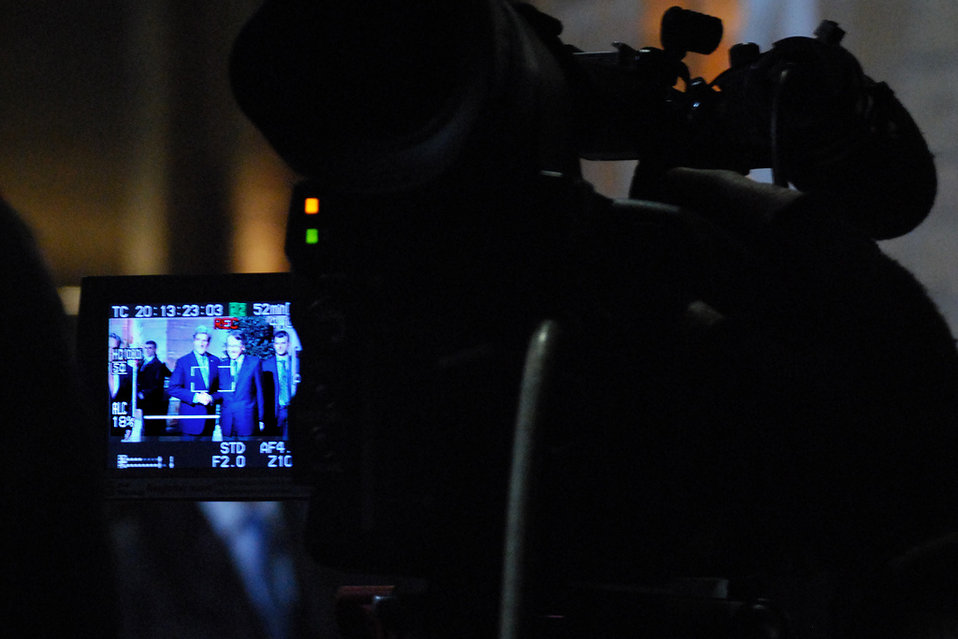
Secretary Kerry Shakes Hands With Italian Foreign Minister Terzi

U.S. Secretary of State John Kerry shakes hands with Italian Foreign Minister Giulio Terzi, as seen through the lens of a television camera, during a meeting at Villa Madama in Rome, Italy, on February 27, 2013. [State Department/ Public Domain]